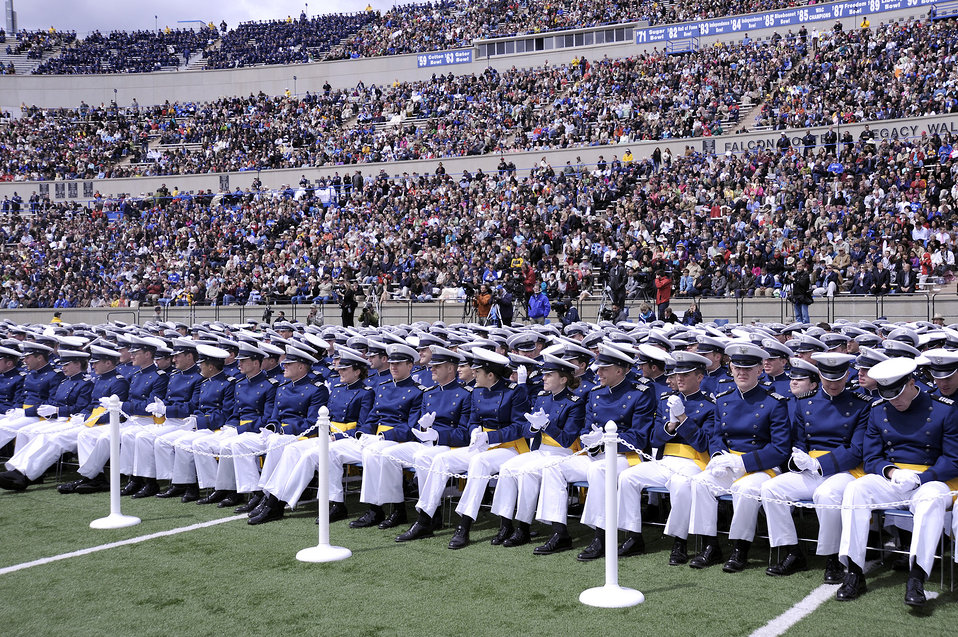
Academy class of 2011

Cadets from the Air Force Academy's Class of 2011 listen to Secretary of the Air Force Michael Donley during his commencement address May 25, 2011, at Falcon Stadium in Colorado Springs, Colo.